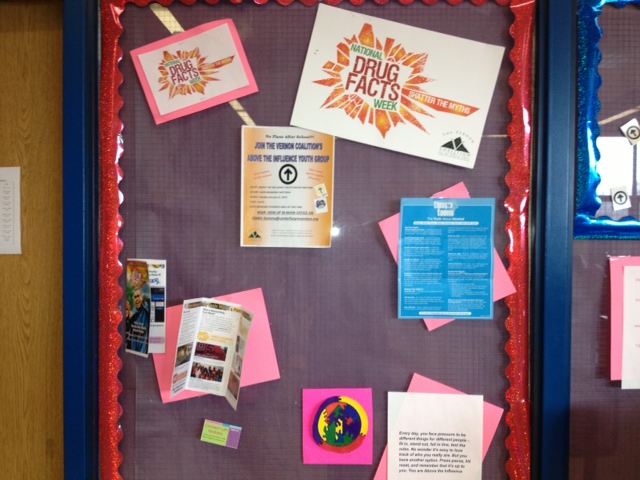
Vernon Coalition NDFW Artwork

Teens from Vernon Coalition in Newton, NJ show off their banner for National Drug Fact Week 2014.